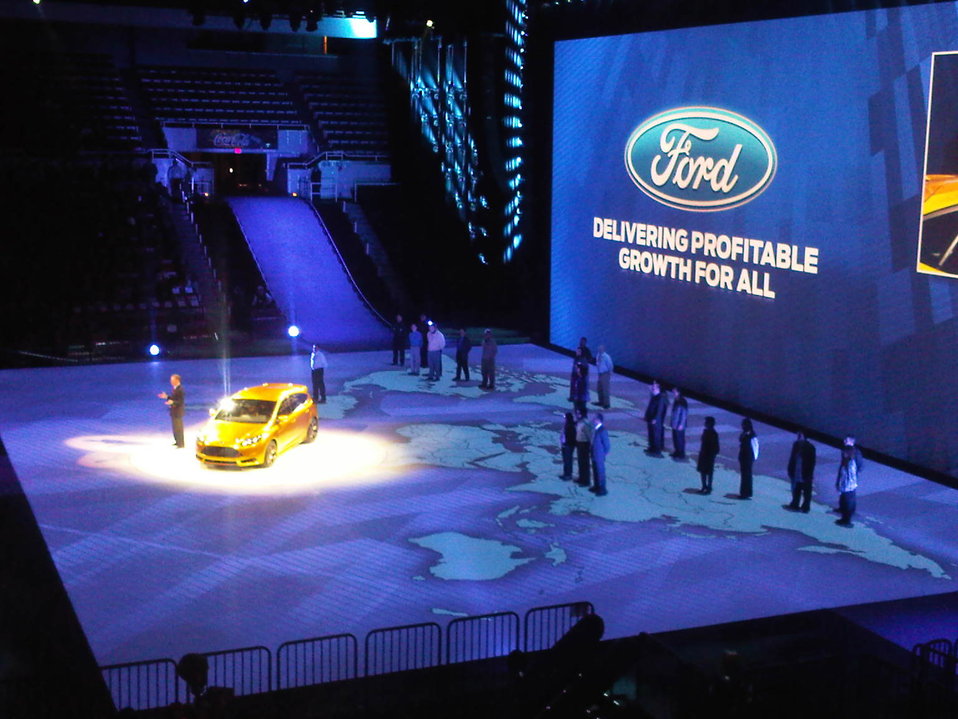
The 2011 Detroit Auto Show